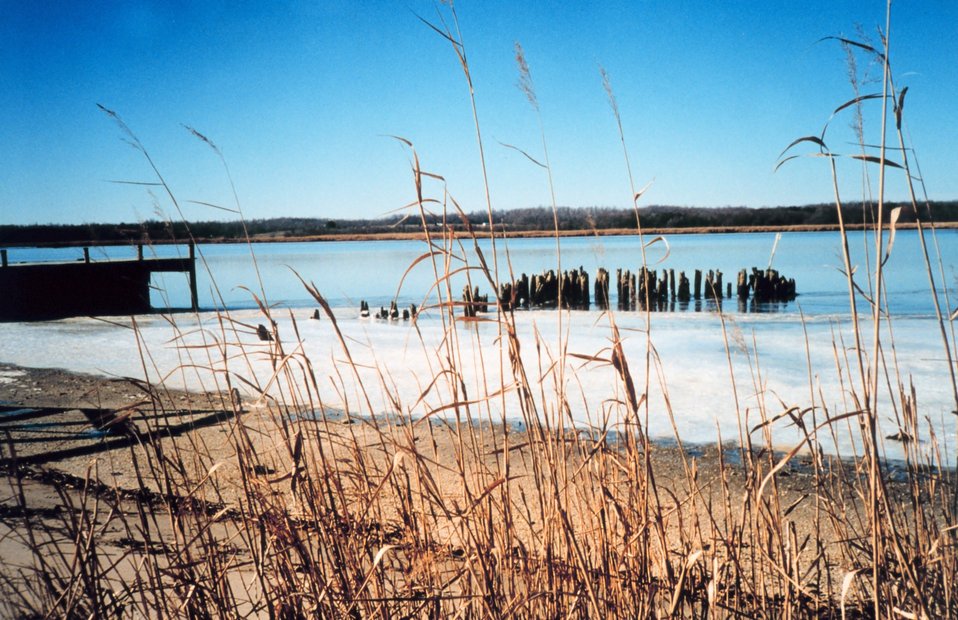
Ice along the shore at the old steamboat landing at Holland Cliffs Shores.